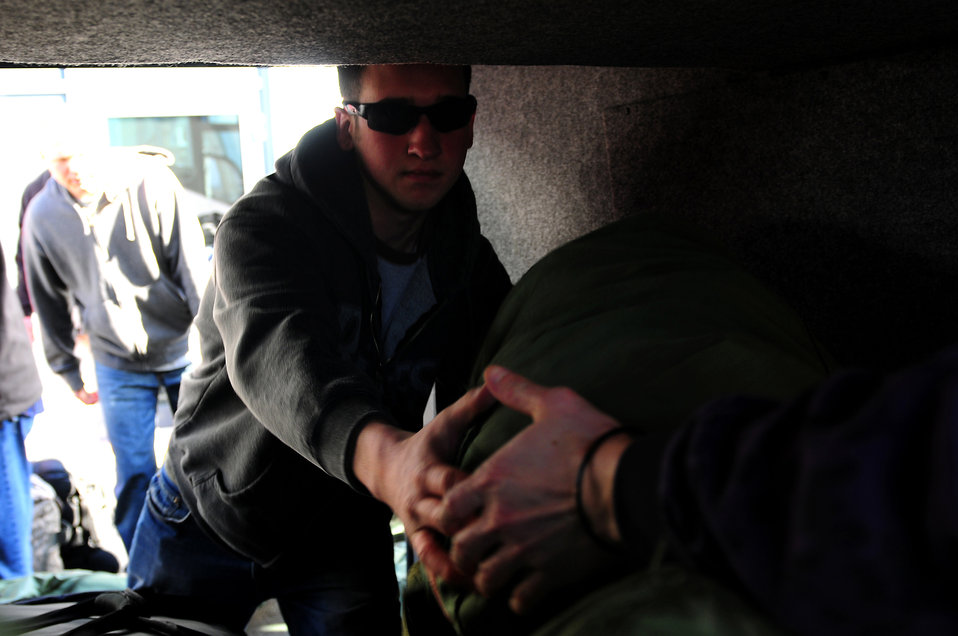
Airmen Support Joint Task Force Odyssey Dawn

U.S. Air Force Airman 1st Class Jefferey Plut, 86th Civil Engineer Squadron, loads cargo on a bus in preparation for a deployment in support of Joint Task Force Odyssey Dawn, Ramstein Air Base, Germany, March 21, 2011. The U.S. Africa Command task force was established to provide operational and tactical command and control of U.S. military forces supporting the international response to the unrest in Libya and enforcement of United Nations Security council Resolution 1973. UNSCR 1873 authorizes all necessary measures to protect civilians in Libya under threat of attack by Qadhafi regime forces. JTF Odyssey Dawn is commanded by U.S. Navy Admiral Samuel J. Locklear, III.